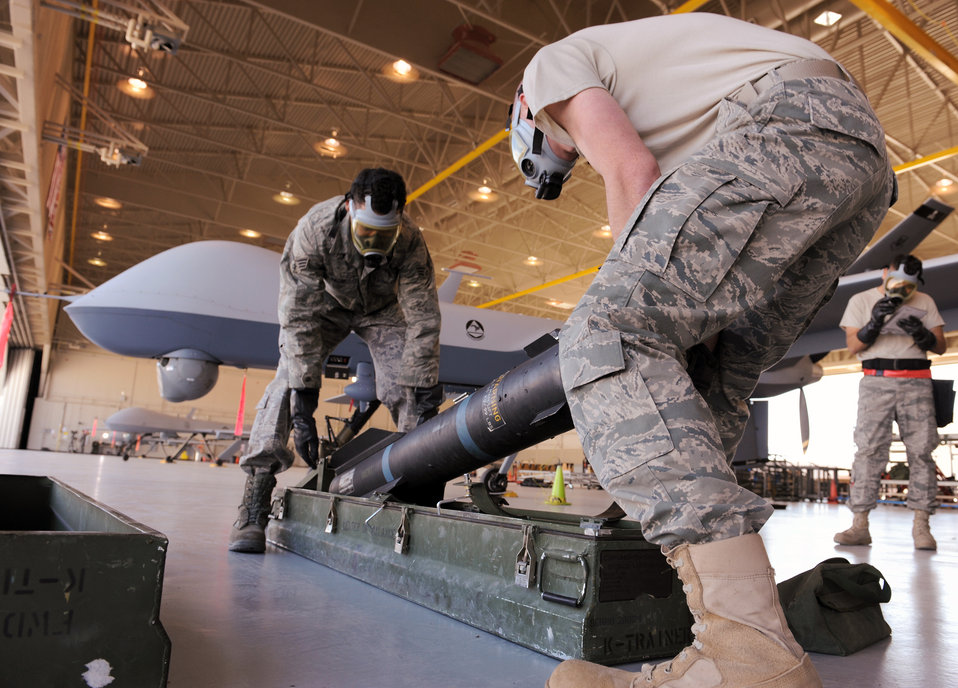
Training for unmanned aircraft systems

Senior Airmen Gale Passe (left) and Jason Atwell prepare to load an AGM-114 Hellfire II air-to-ground missile onto a MQ-9 Reaper during weapons load training April 22 at Creech Air Force Base, Nev. Reaper load crewmembers were conducting monthly training to maintain their qualifications on the MQ-9 airframe. Load crew members were also required to wear their gas mask to simulate loading in a hostile environment. Airmen Passe and Atwell are Reaper weapon loaders assigned to the 432nd Aircraft Maintenance Squadron.